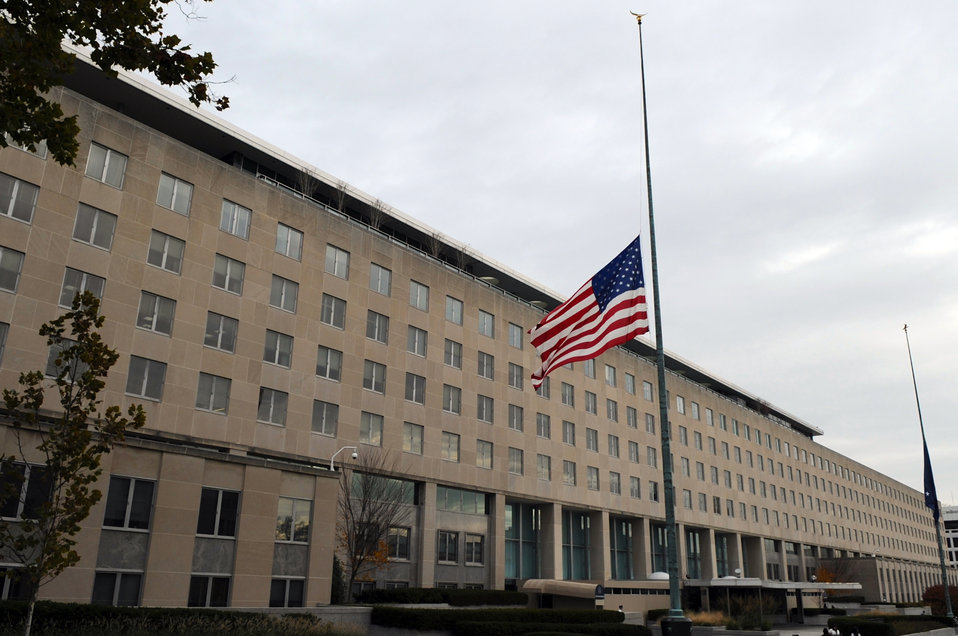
The U.S. Government, State Department Observe the 50th Anniversary of the Assassination of President Kennedy

The United States and the Department of State flags hang at half-staff in Washington, D.C., on November 22, 2013, as the federal government observes the 50th anniversary of the assassination of President John F. Kennedy.